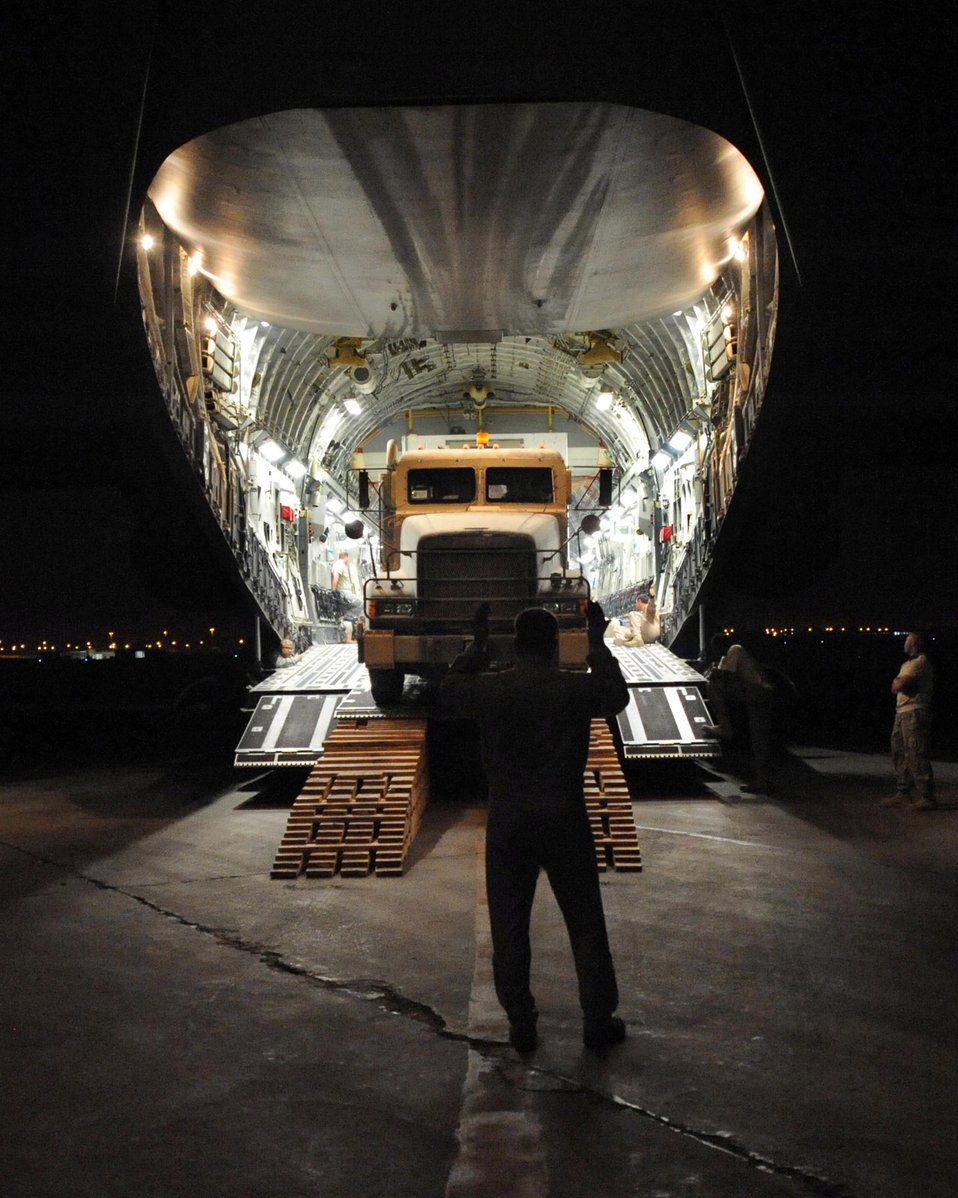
No cargo too large for Sather aerial port Airmen

A C-17 Globemaster III loadmaster guides a 10-ton armored tractor as it unloads a new communication trailer designed to provide phone service to the entire Victory Base Complex in Baghdad. Airmen from the 447th Air Expeditionary Group and Soldiers from the 553rd Combat Sustainment Support Battalion joined forces to deliver two of the 66-foot, 80,000 pound trailers safely.